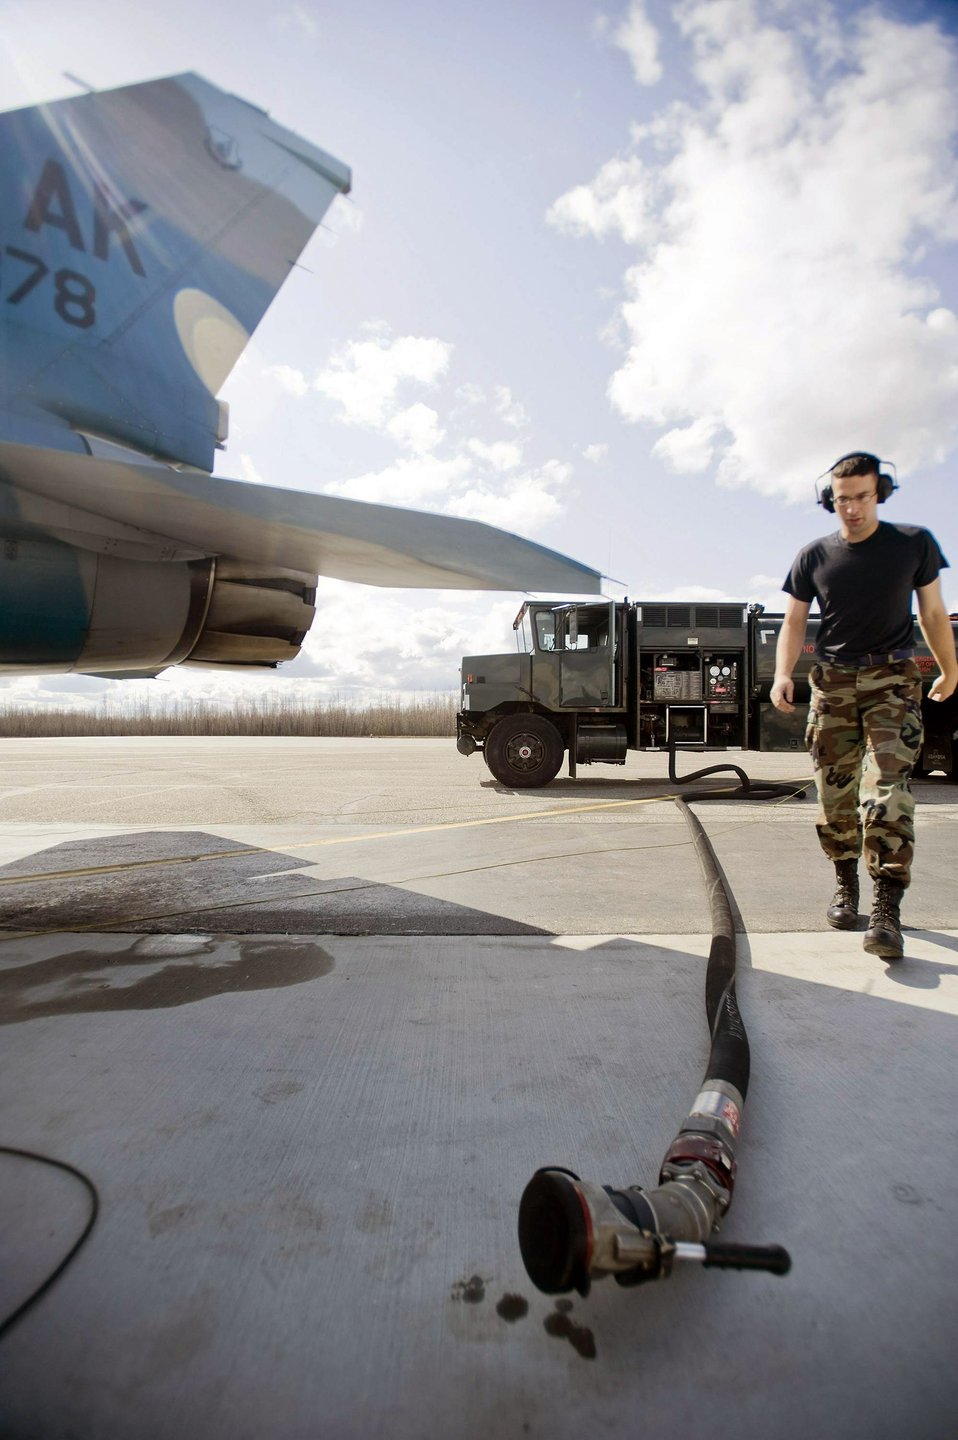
'Aggressive' training helps pilots outmaneuver enemy

Airman 1st Class Aaron Orr prepares to fuel an F-16 Fighting Falcon May 8 at Eielson Air Force Base, Alaska. The aircraft belongs to the 18th Aggressor Squadron and is participating in Northern Edge 2008, simulating enemy aircraft in order to allow joint forces to train in a realistic environment. Airman Orr is a member of the 374th Logistic Readiness Squadron.